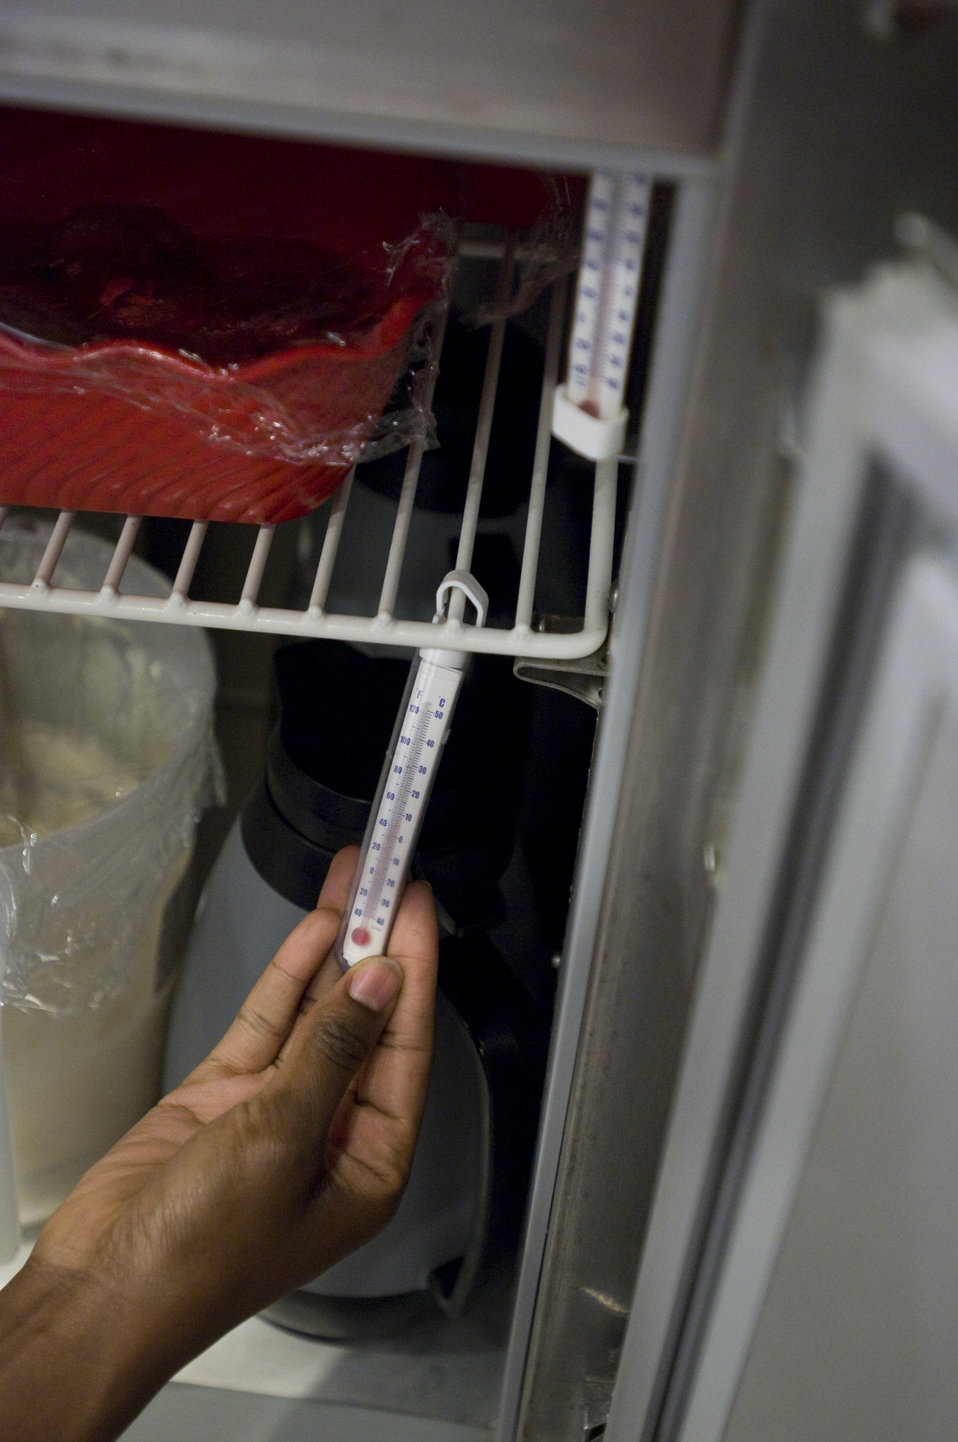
This image depicts a state-appointed public health inspector, who at this pint in her inspection, was checking the thermometer in a stainless steel refridgerator, making sure that the temperature is within the required limits necessary to reduce food spoilage and contamination. Health inspectors are not only concerned with the transmission of pathogenic organisms due to unsanitary conditions, or with toxic substance contamination, but also with the safety precautions to be taken to insure an environment is generally safe.